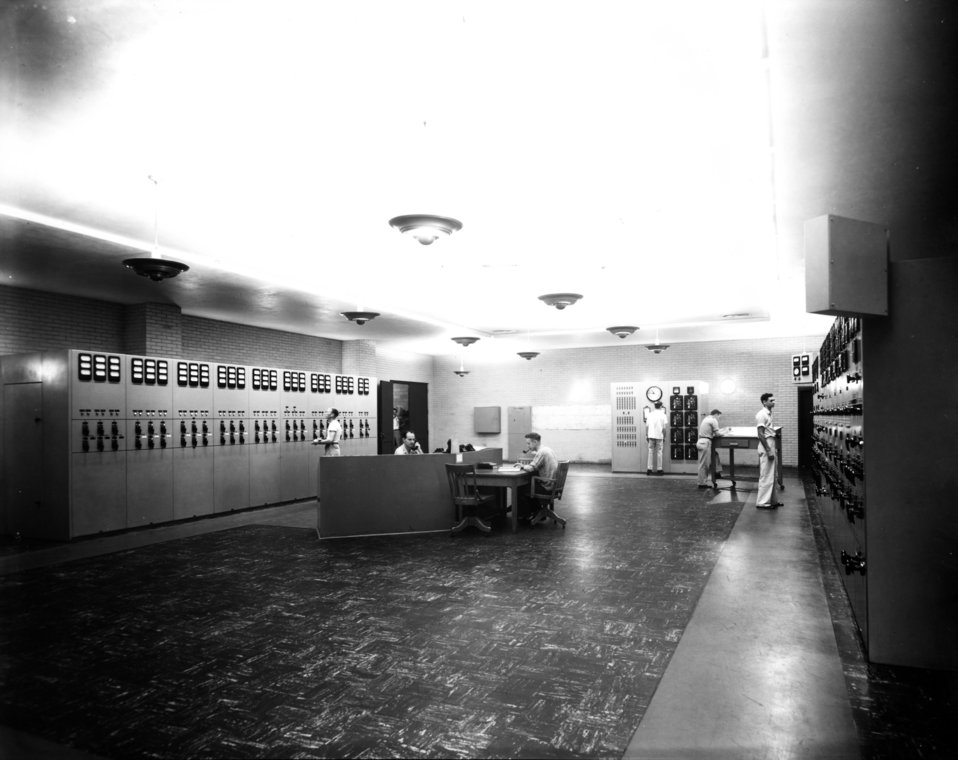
K-27 at Oak Ridge